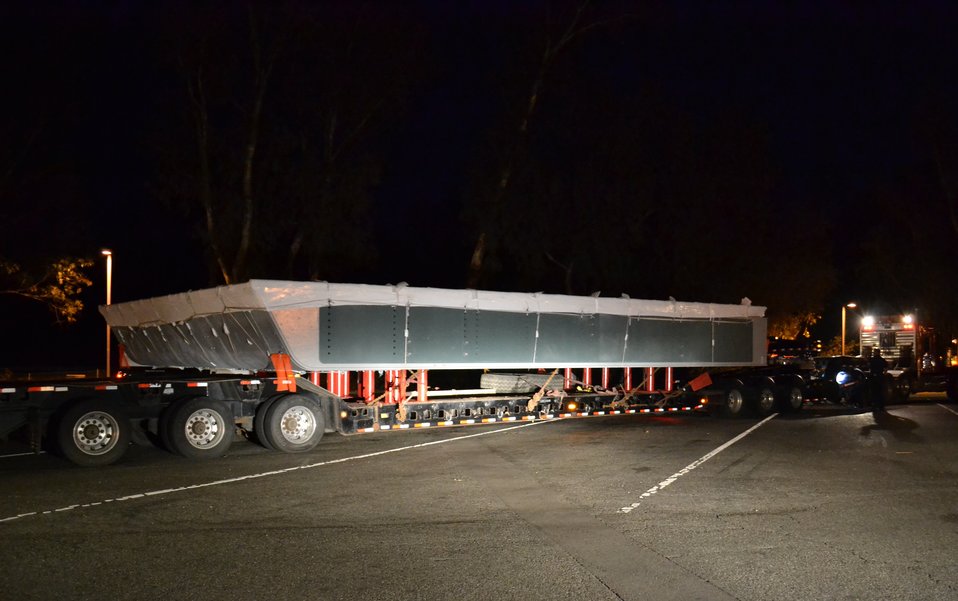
First giant gate arrives for Folsom Dam auxiliary spillway

A 100-foot-long flatbed truck carrying the first of 12 giant gates for the new auxiliary spillway at Folsom Dam prepares to leave a rest stop near Dunnigan Calif., March 13, 2014, and complete the last leg of its 600-mile journey from the Oregon Iron Works facility in Vancouver, Wash. The auxiliary spillway project is part of the Joint Federal Project, a $900-million cooperative effort to improve the safety of Folsom Dam and reduce flood risk for the Sacramento area.